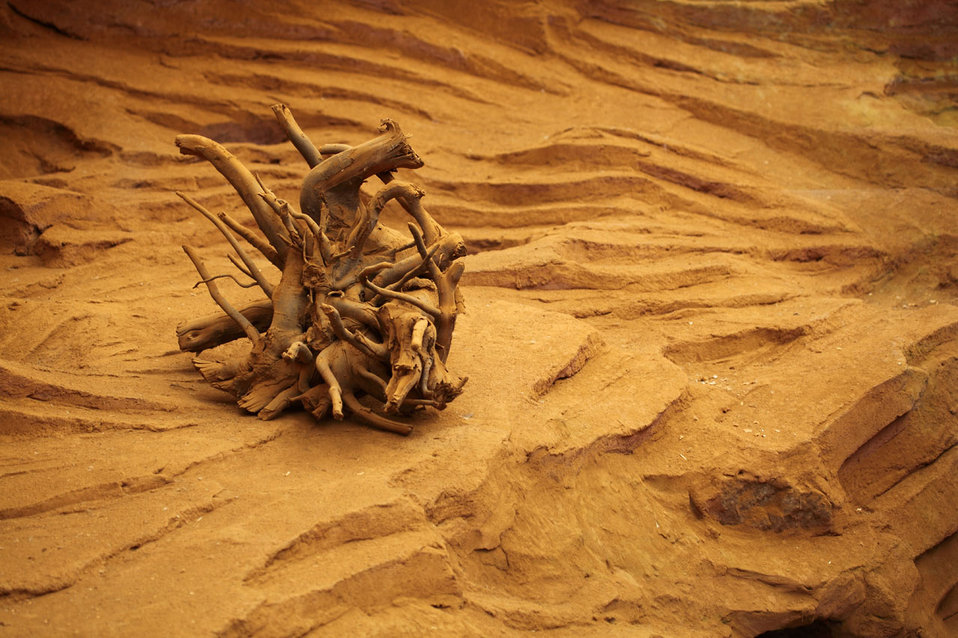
Dry tree stump in desert.